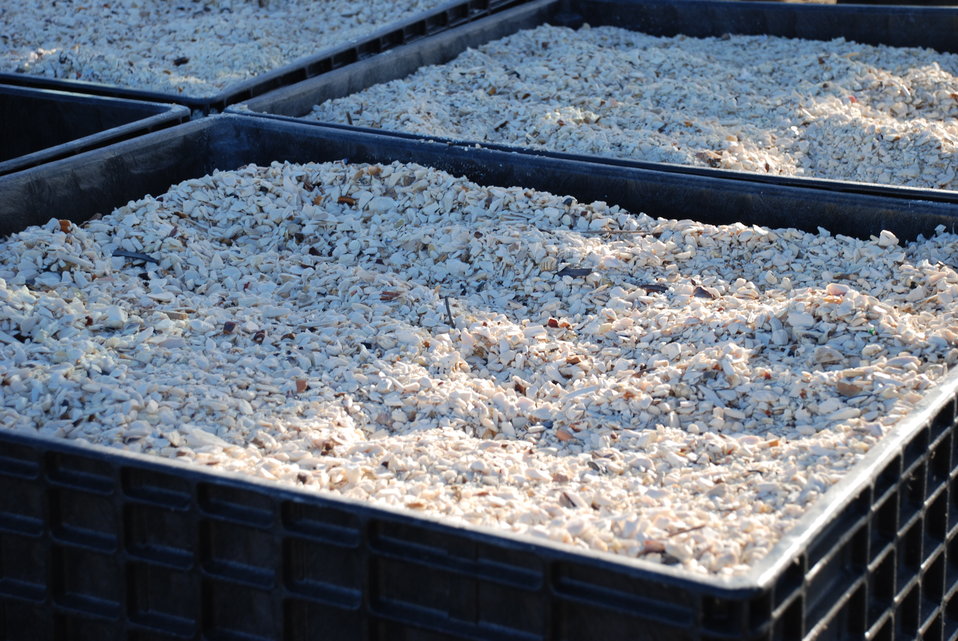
Ivory Crush 2013